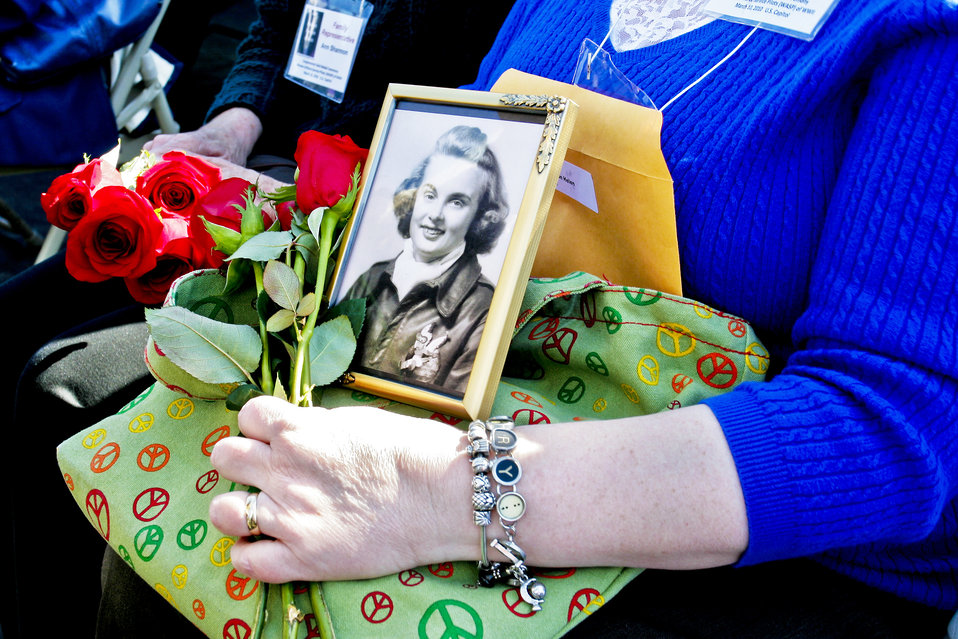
Women pilots of World War II inspired generations

Jan Nicolai holds a photo of Helen Jo Anderson Severson, a deceased pilot from South Dakota who flew with the Women Airforce Service Pilots during World War II during a wreath-laying and remembrance ceremony for all 1,102 pilots March 9, 2010, at the Air Force Memorial in Arlington, Va. The ceremony was part of a two-day event in which all pilots will receive the Congressional Gold Medal at the U.S. Capitol for their service.